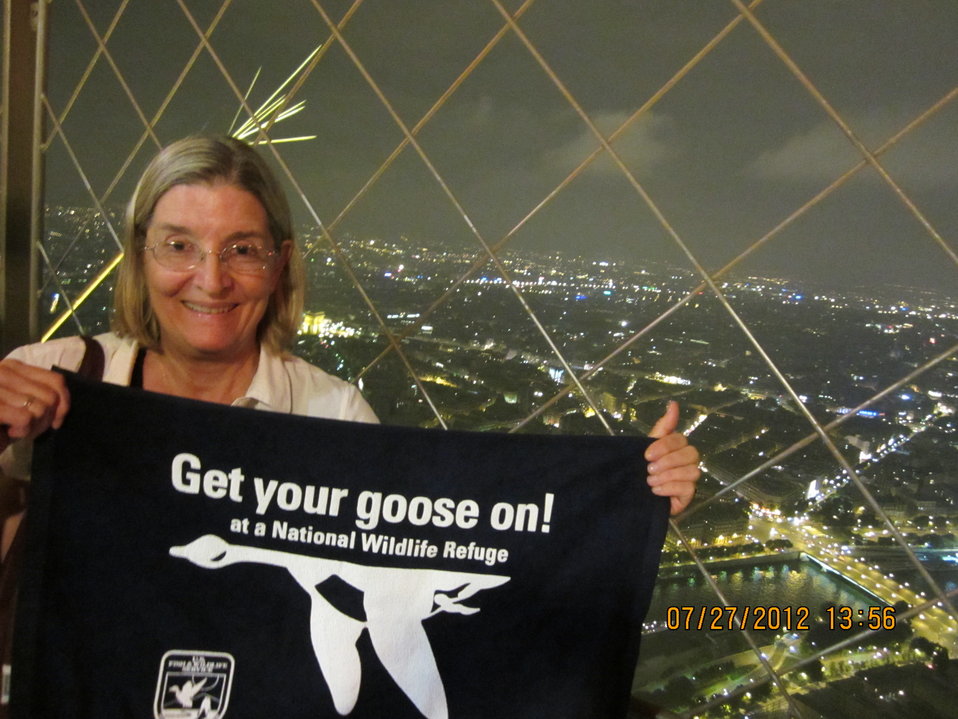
Get Your Goose On! - Eiffel Tower Style!

Taken from the top of the Eiffel Tower.